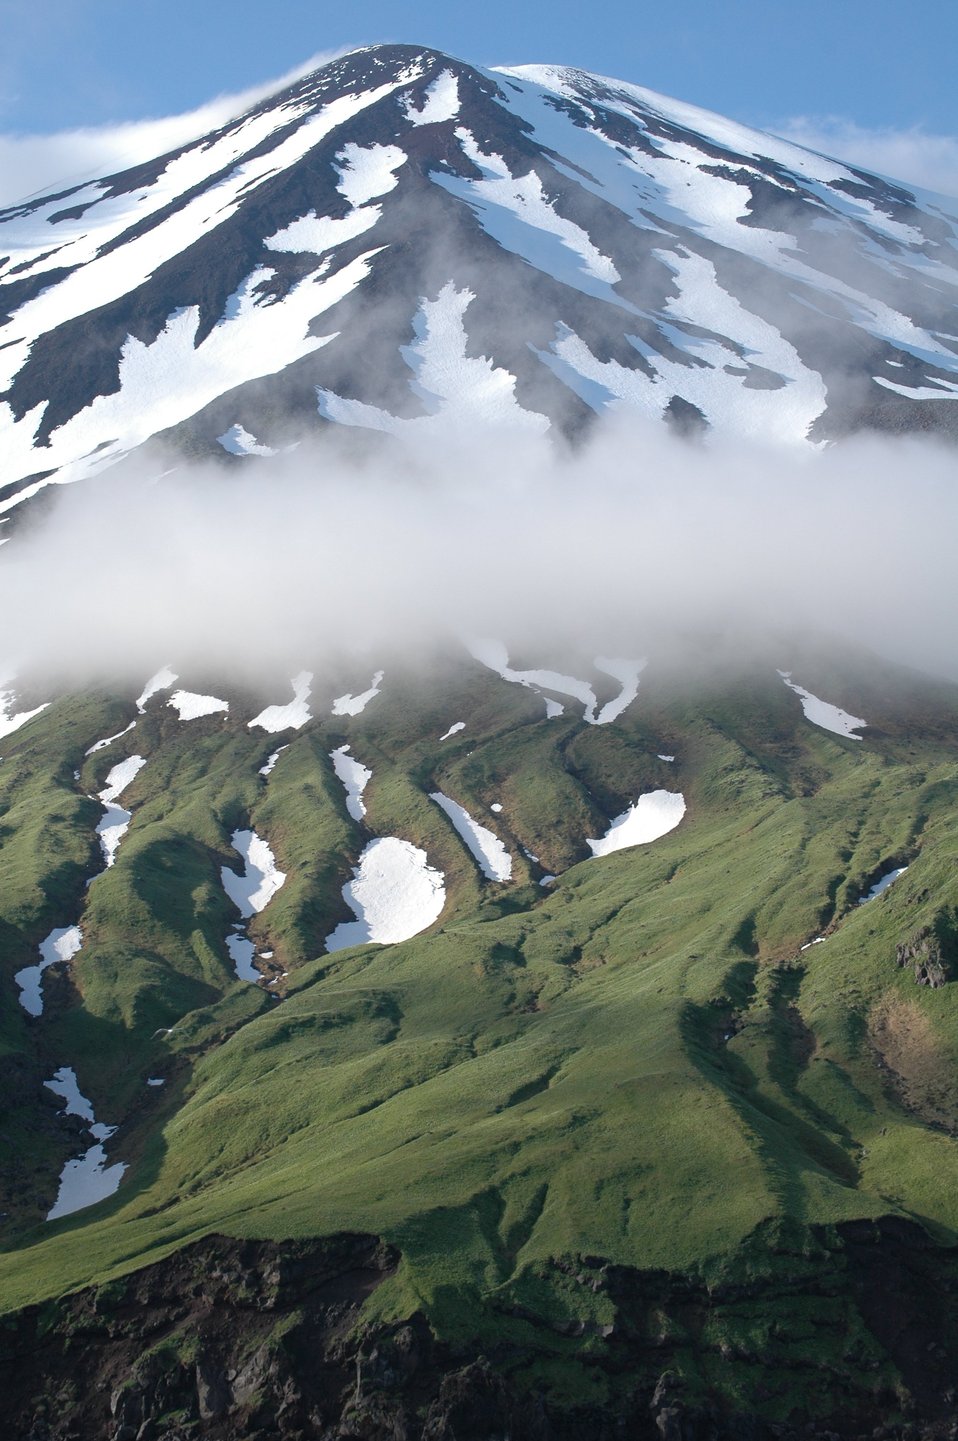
A ribbon of cloud bisecting the snow covered upper reaches of Tanaga Volcano from the moss covered lower slopes.